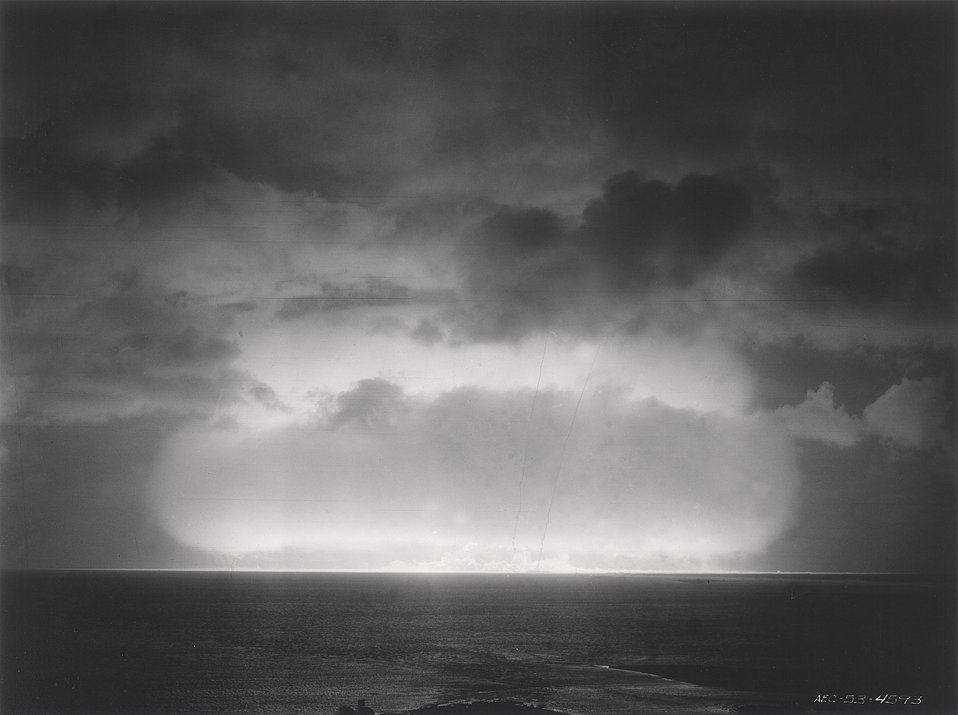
A nuclear detonation during the 1951 spring tests at Eniwetok Atoll is shown with smoke trails from rockets designed to capture sample materials.